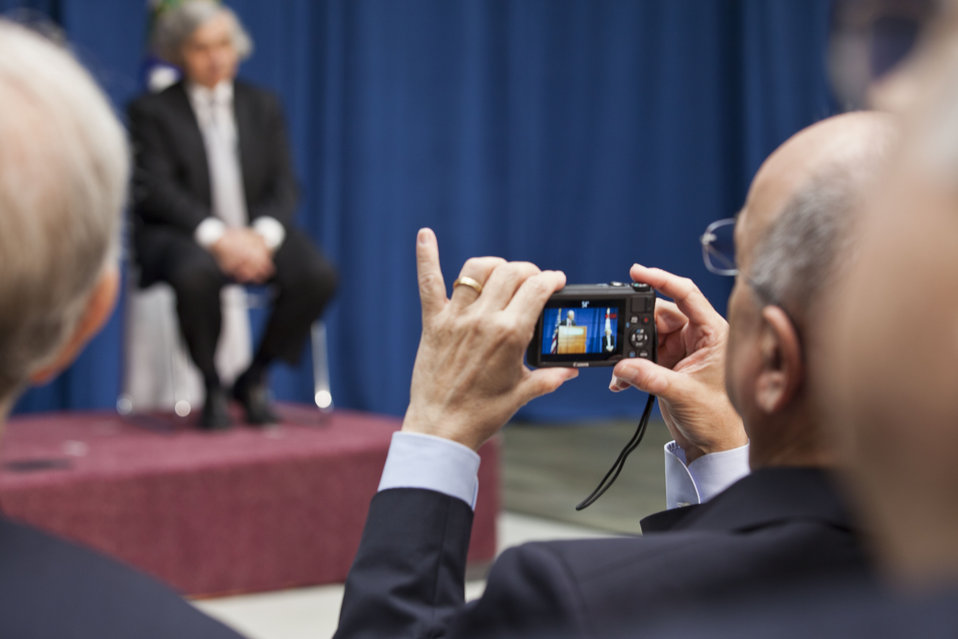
Welcoming Dr. Moniz to the Department of Energy

Friends, family members, and colleagues gathered at the Department of Energy in Washington, D.C., to witness the swearing in of Dr. Ernest Moniz.